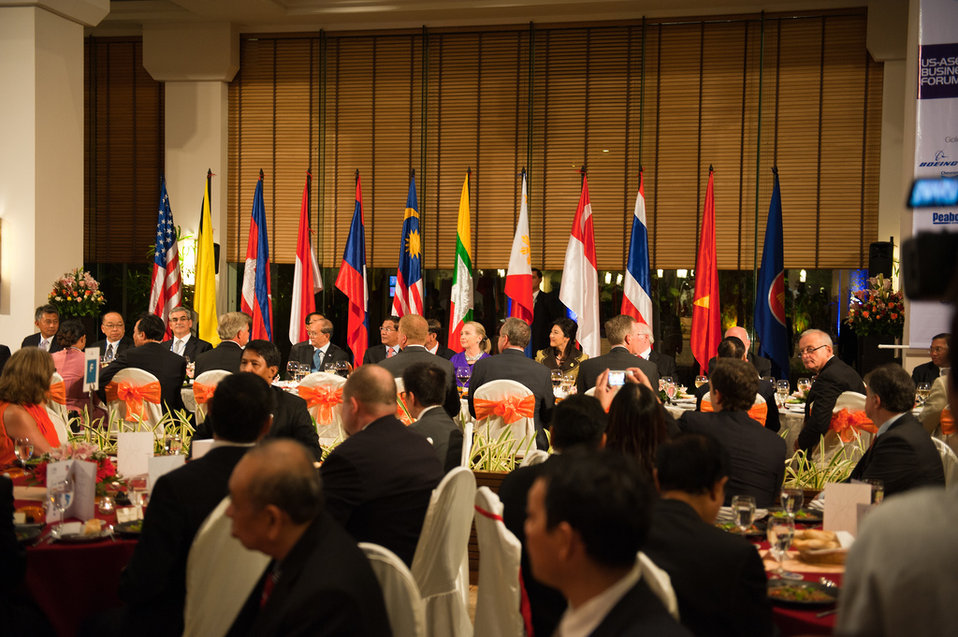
Secretary Clinton at the U.S.-ASEAN Business Forum and Dinner

U.S. Secretary of State Hillary Rodham Clinton participates in the U.S.-ASEAN Business Forum and Dinner in Siem Reap, Cambodia, on July 13, 2012.